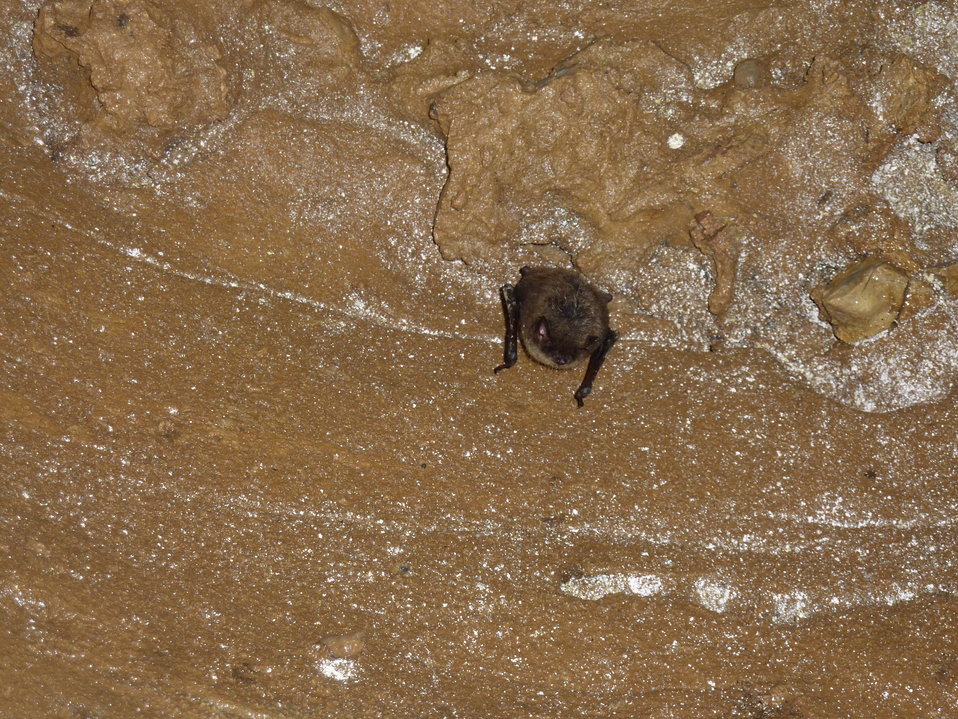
Little brown bat with WNS, Trigg Co., KY

Single little brown bat with WNS